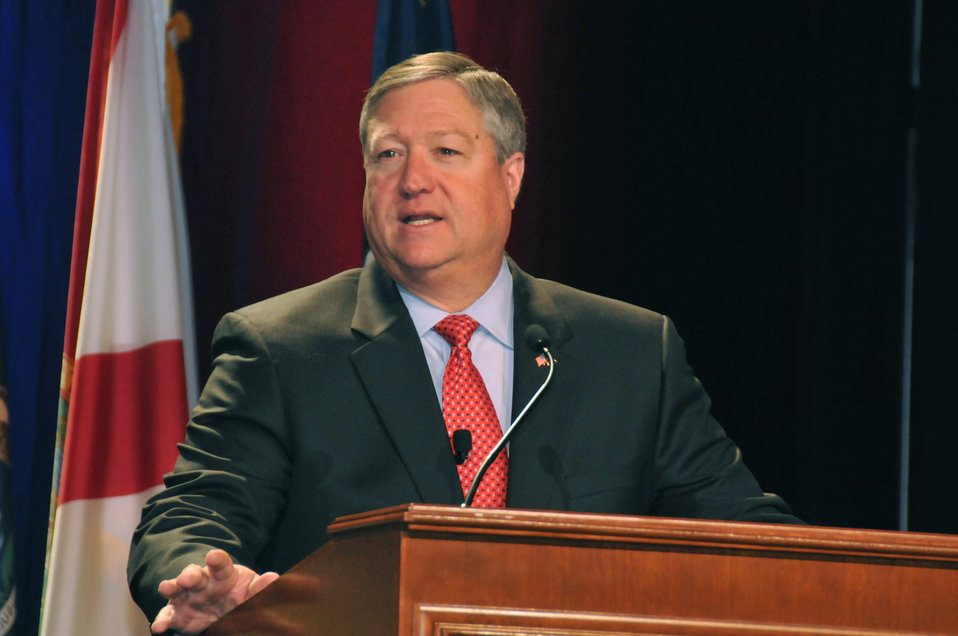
Secretary Donley

Secretary of the Air Force Michael Donley speaks to approximately 2,000 Air National Guard senior leaders Nov. 16, 2010, at the 2010 Air National Guard Senior Leadership Conference in Washington D.C.